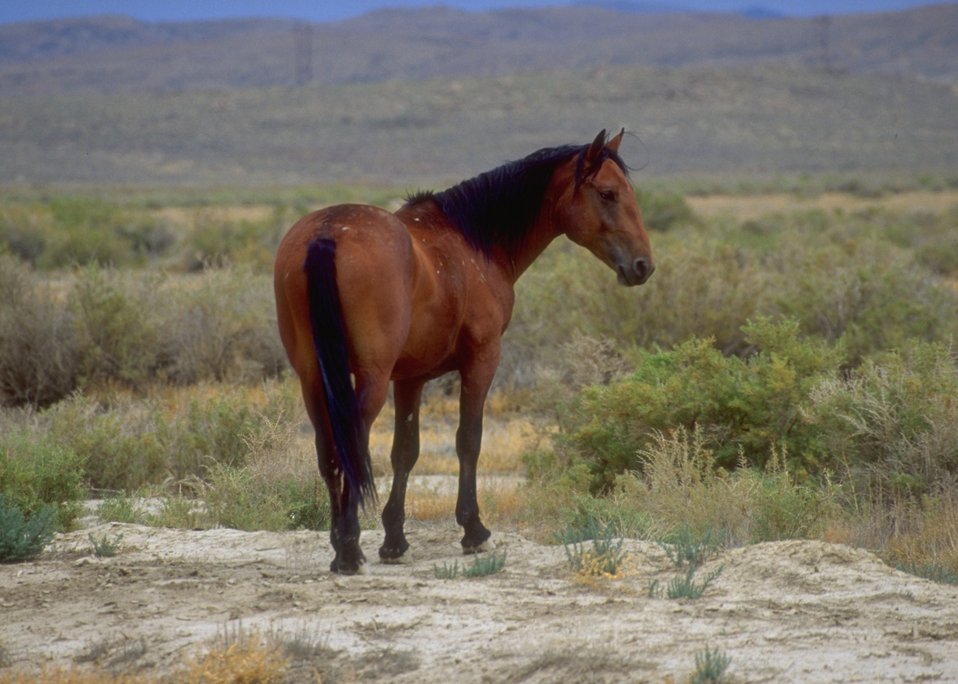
Wild horses, Rock Springs Field Office.